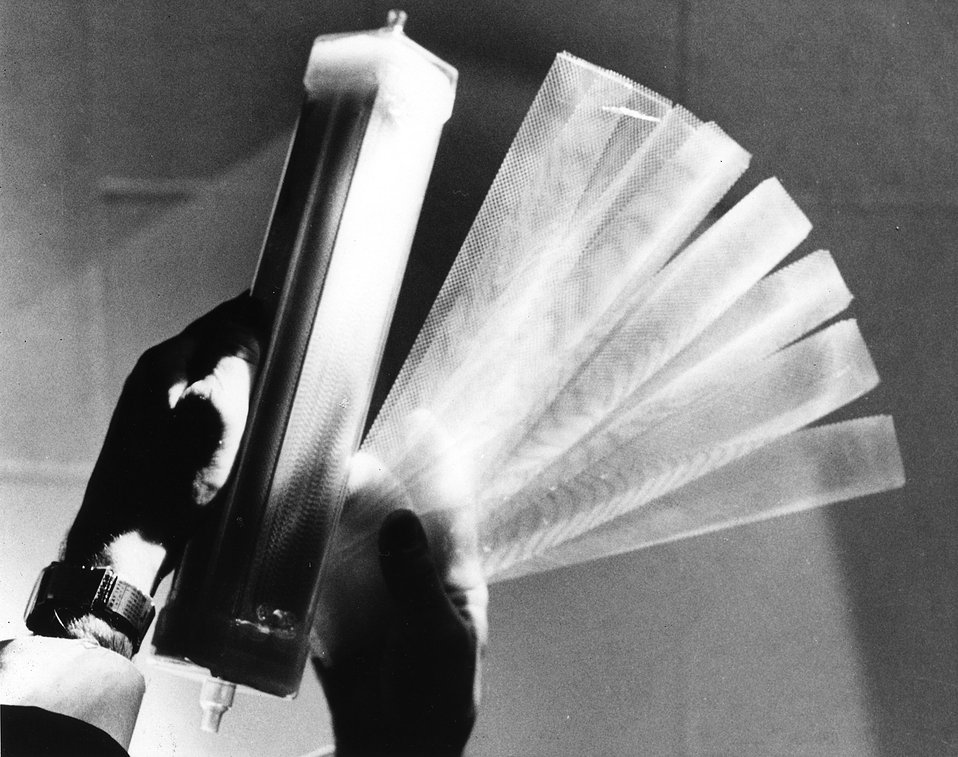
Successful search for special adhesives for a synchrotron at AEC's Argonne solved the major problem in developing the artificial kidney--the bonding of many short lengths of plastic tubing.
c.1970